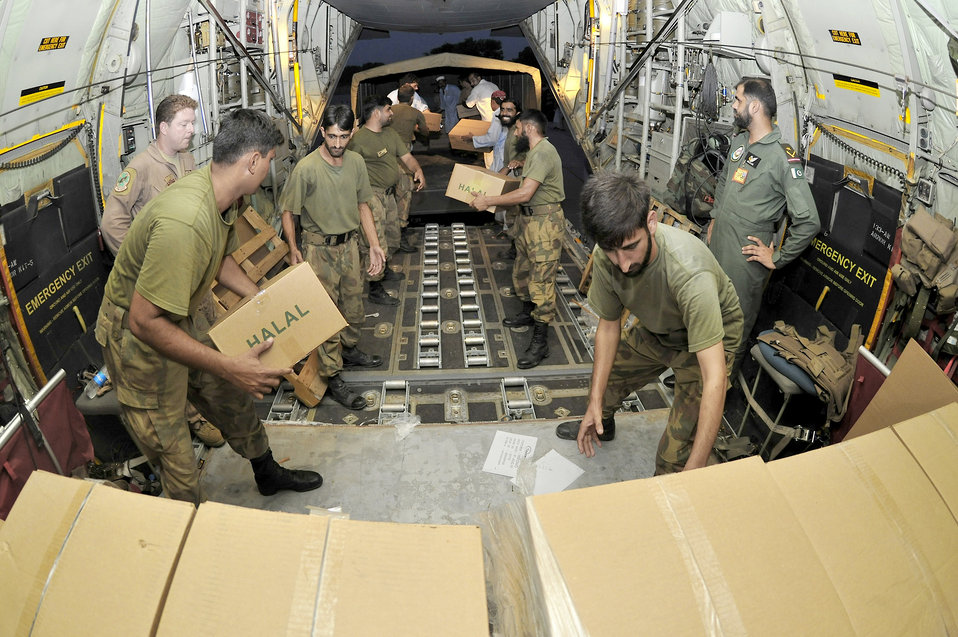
Pakistan relief efforts

Pakistani air force members help unload thousands of Halal meals from an Air Force C-130H Hercules Aug. 1, 2010, in Peshawar, Pakistan. The meals will go to Pakistanis affected by the floods that have devastated the region. The C-130H is assigned to the 455th Air Expeditionary Wing at Bagram Airfield, Afghanistan.